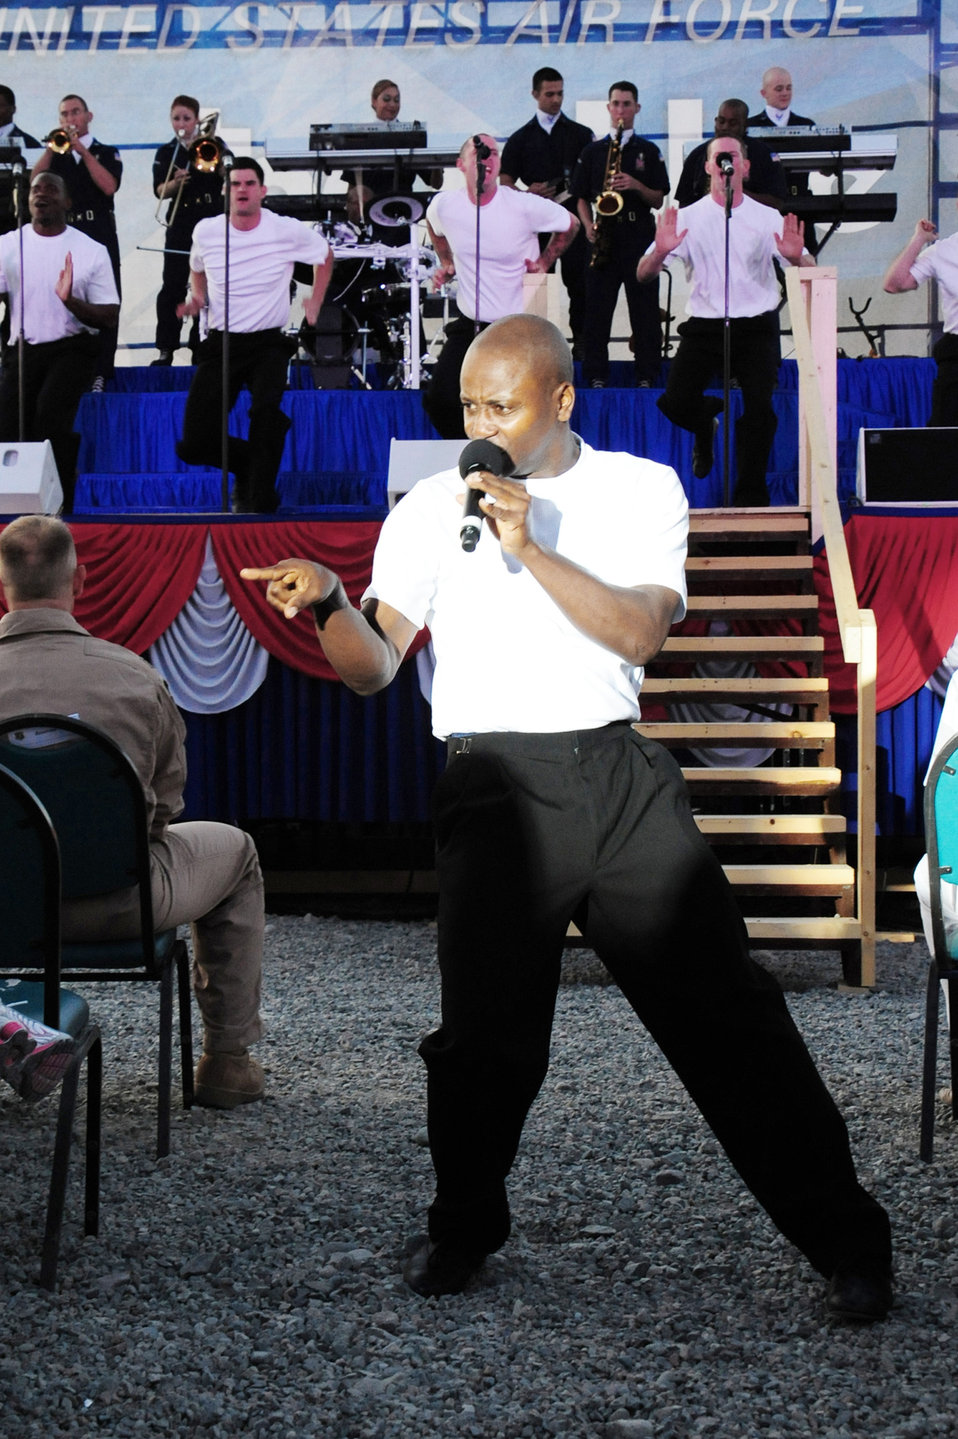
Tops In Blue entertain deployed forces in Kyrgyzstan

Tech. Sgt. Octavious Hill sings to the crowd during a performance July 9 at Manas Air Base, Kyrgyzstan. Sergeant Hill is a 99th Civil Engineer Squadron ventilation and refrigeration craftsman stationed at Nellis Air Force Base, Nev., and hails from Opelika, Ala.